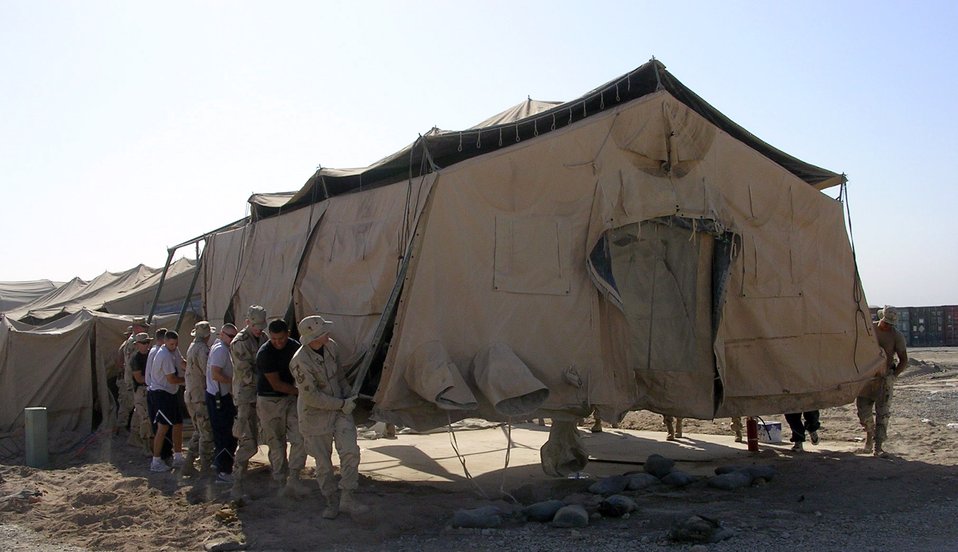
Pick up and move

ALI BASE, Iraq (AFPN) -- Taking Air and Space Expeditionary Force doctrine literally, Airmen move their tent to a new location at this base. When the 407th Air Expeditionary Group needed space for a new services facility, 407th Expeditionary Civil Engineer Squadron troops and volunteers simply picked up the tent that stood in the way and moved it to a new spot 200 yards away. That saved the several hour it would have taken to tear down and set the tent back up .